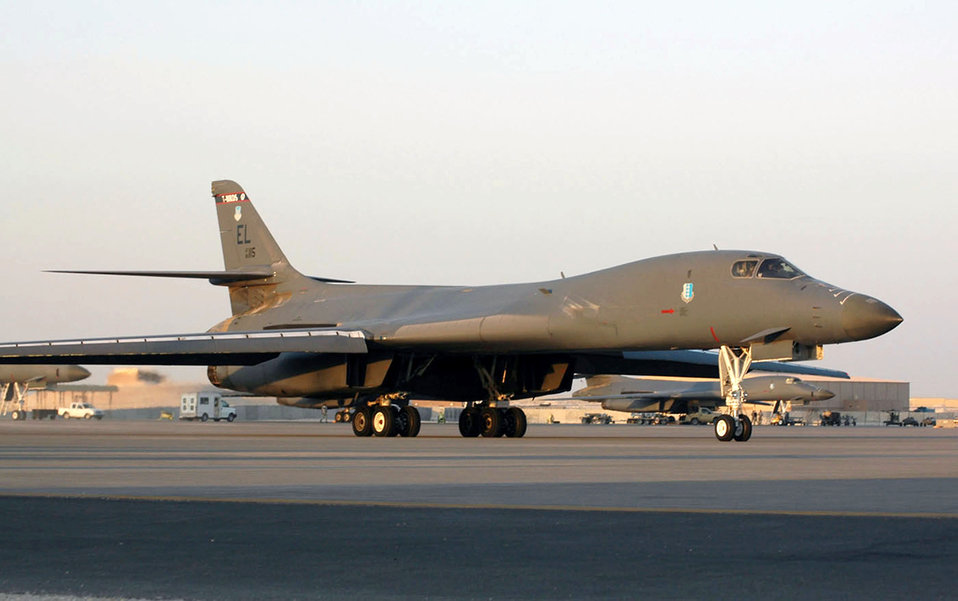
B-1 crews excel at shows of presence

A B-1B Lancer at a forward deployed location in Southwest Asia prepares for a mission. Lancers support both Operation Enduring Freedom and Operation Iraqi Freedom.